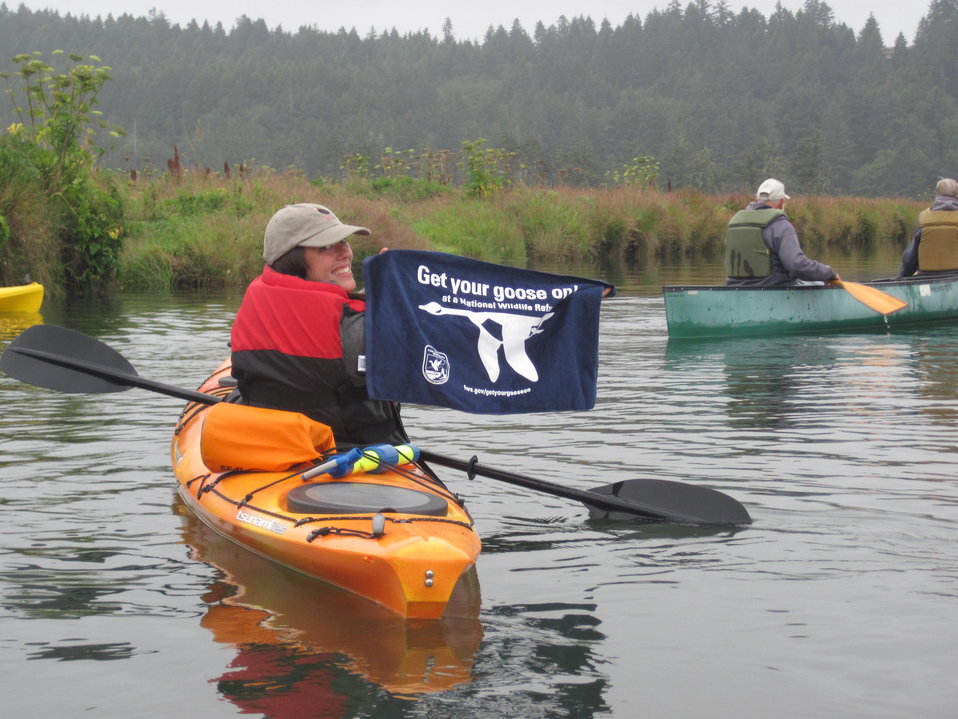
Get Your Goose On!

Octavia Sola' Gets Her Goose On as she leads an interpretive paddling trip at Siletz Bay National Wildlife Refuge on the Oregon Coast!